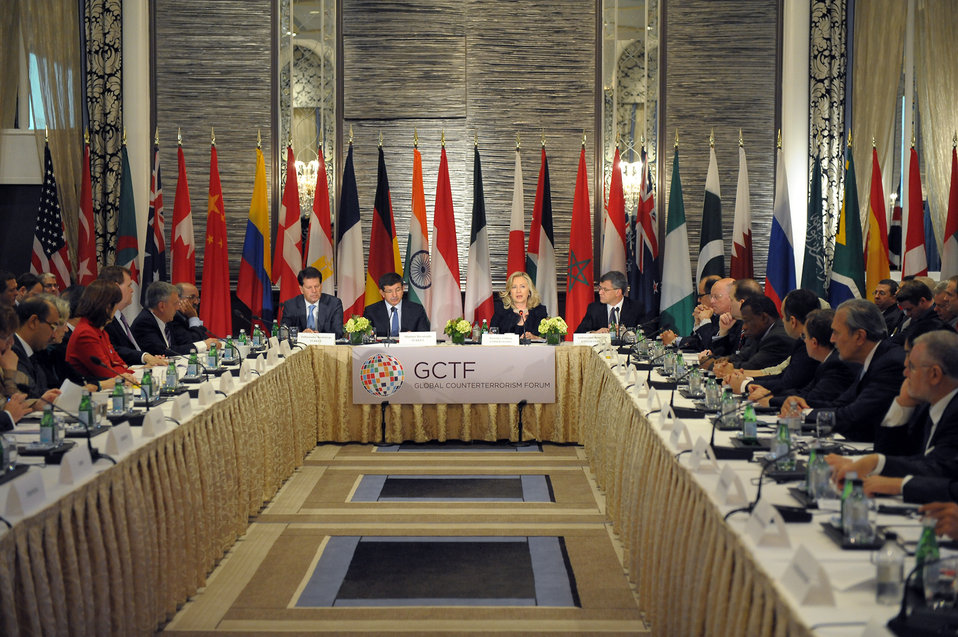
Secretary Clinton and Turkish Foreign Minister Davutoglu Co-Host the Official Launch of the Global Counterterrorism Forum

U.S. Secretary of State Hillary Rodham Clinton and Turkish Foreign Minister Davutoglu co-host the official launch of the Global Counterterrorism Forum, at the Waldorf-Astoria Hotel in New York, New York, on September 22, 2011.